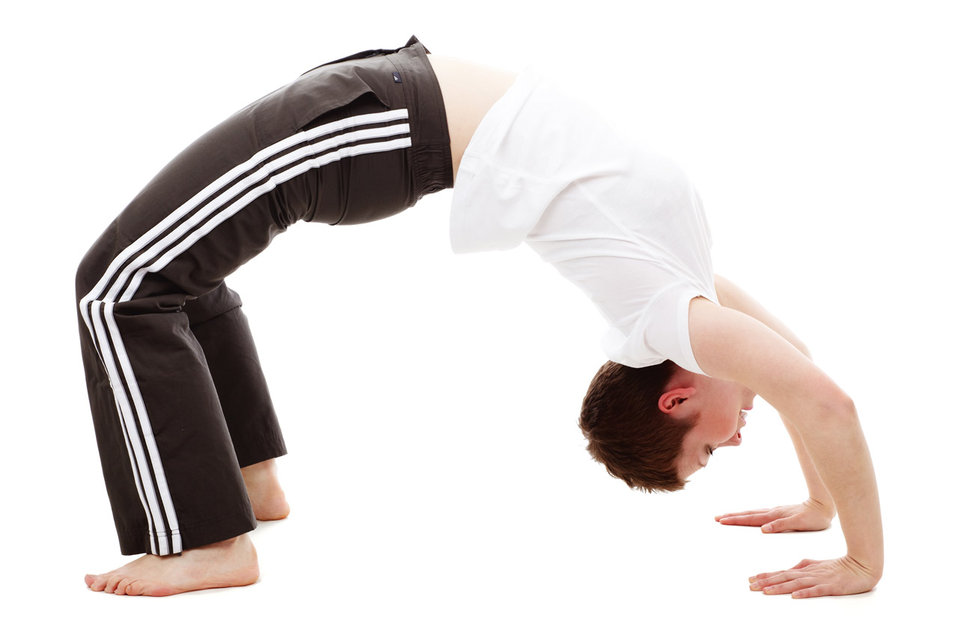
Backbend

Young woman doing backbend isolated on white background - jana svojsova.